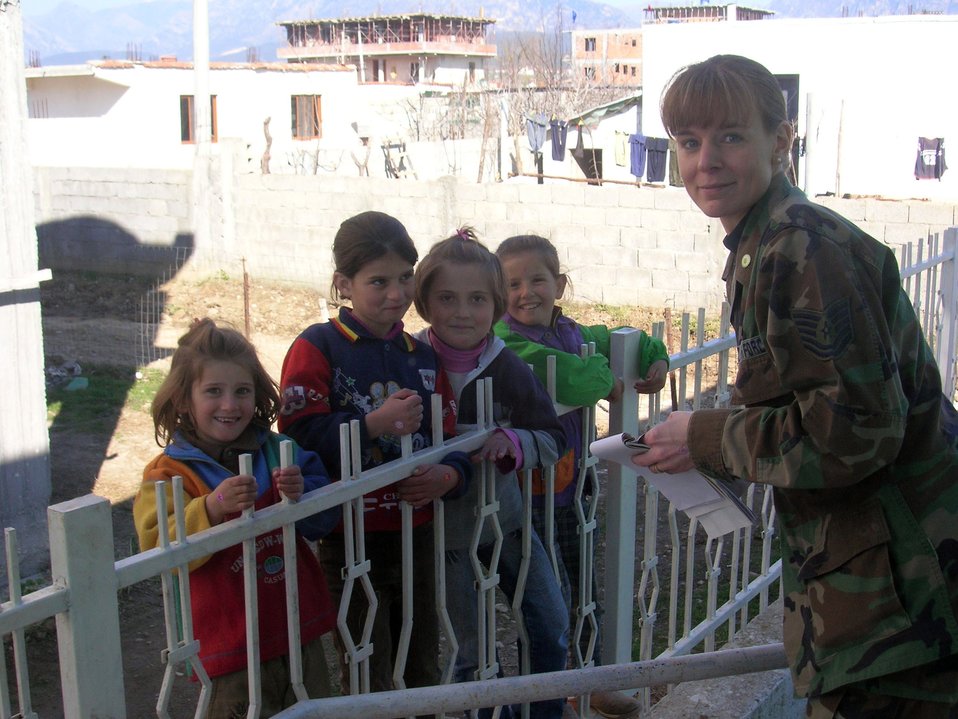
Medics provide humanitarian support in Albania

Tech. Sgt. Jacqueline Sweet-McNeil visits with children in February in Albania. Sergeant Sweet-McNeil, along with four other 109th Airlift Wing medics from the Stratton Air National Guard Base in New York, administered 1,000 Hepatitis A shots during a humanitarian mission with the New Jersey National Guard.